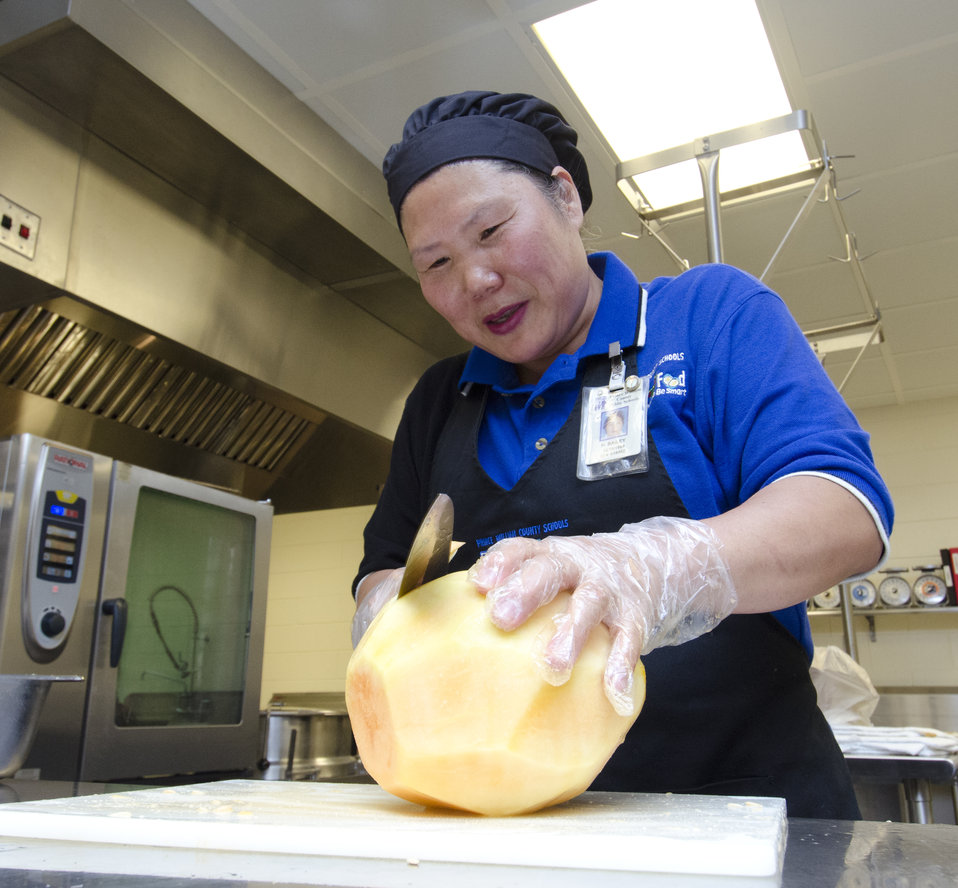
School lunch staff and students enjoy the new school lunch menu created to meet the new standards at the Yorkshire Elementary School in Manassas, VA on Friday, Sept. 7, 2012.